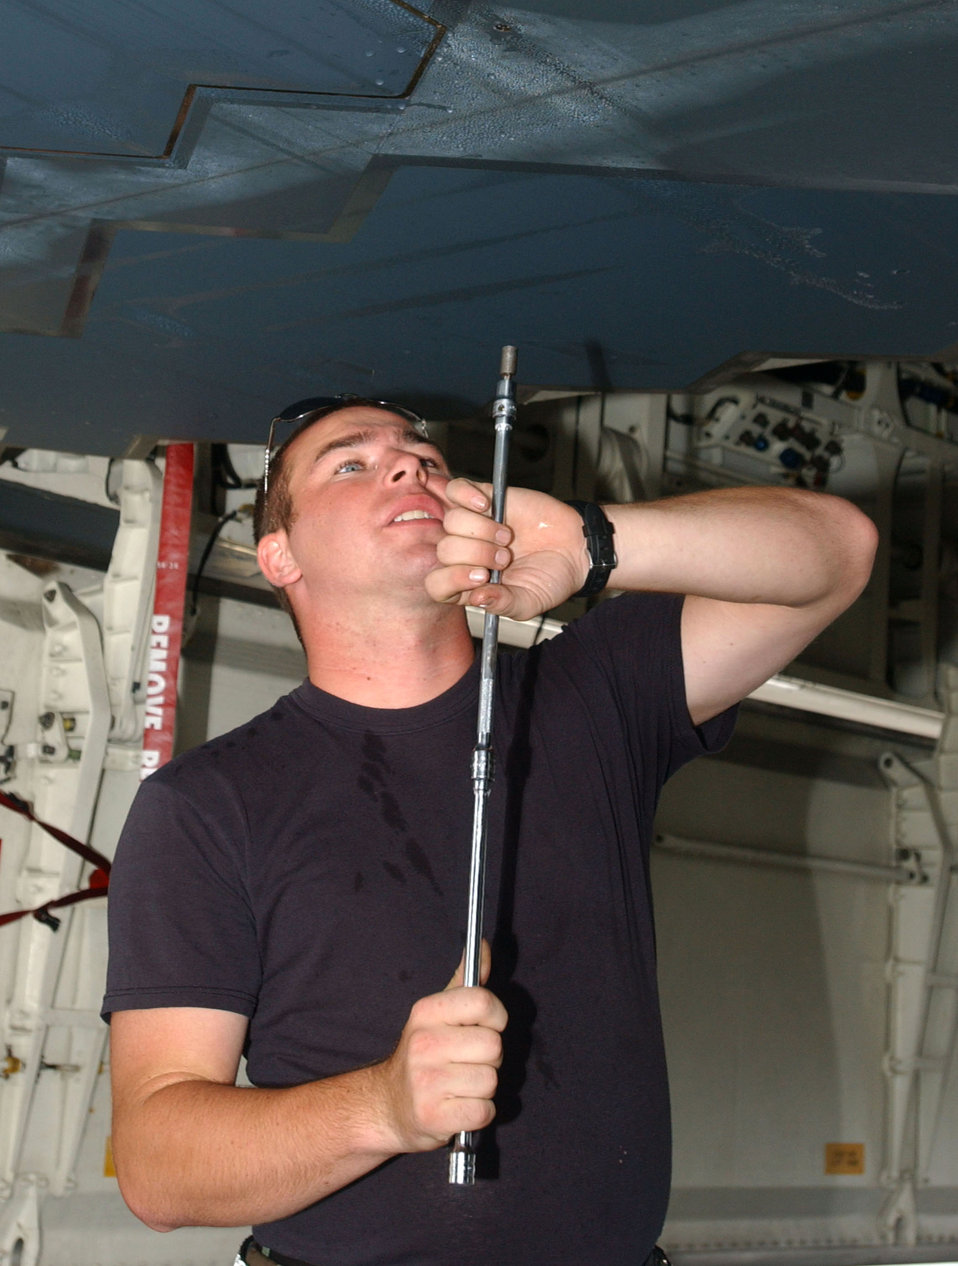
Crew chiefs keep B-2 combat capable

Senior Airman Patrick Bost prepares a B-2 Spirit bomber Oct. 24 for a combat training sortie at Andersen Air Force Base, Guam. Airman Bost is a maintainer deployed from Whiteman AFB, Mo., as part of a small contingent of specialists that work on the stealth airframe.